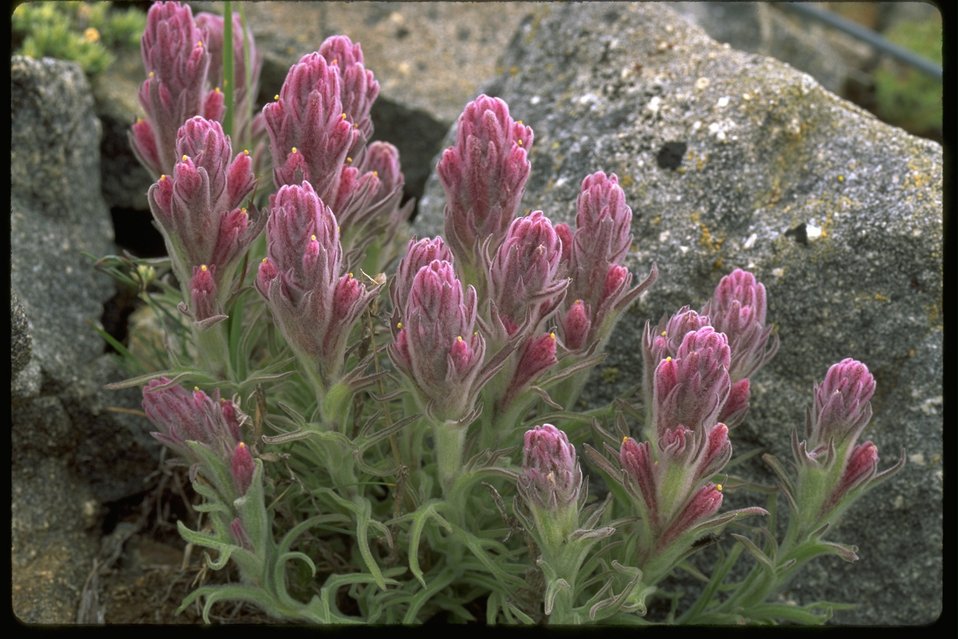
Indian Paintbrush found on Dutchman Peak.